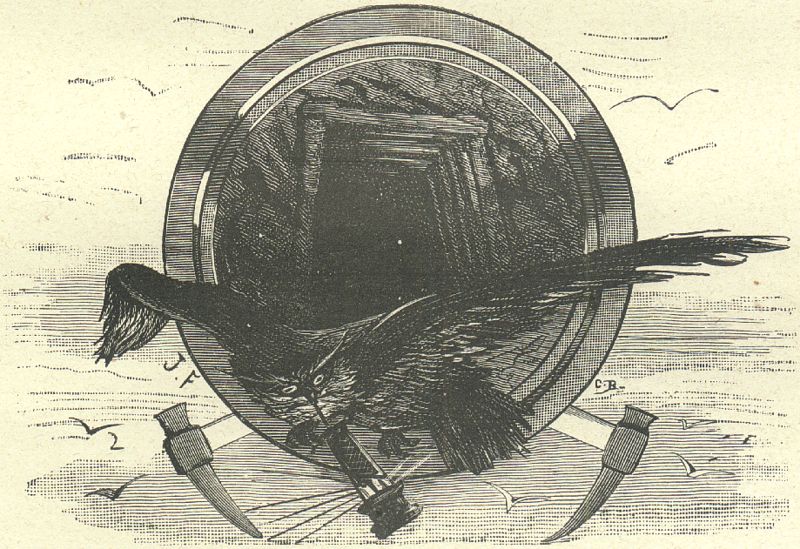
An illustration from the novel 'The Child of the Cavern' (alternative English titles for this novel include: Black Diamonds, Black Indies, Child of the Cavern, or Strange Doings Underground and The Underground City) by Jules Verne drawn by Jules Férat. Polski: Ilustracja powieści Juliusza Verne'a 'Czarne Indie' autorstwa Julesa Férata. Français : 'Les Indes noires', Jules Férat. Orginal description from the book: